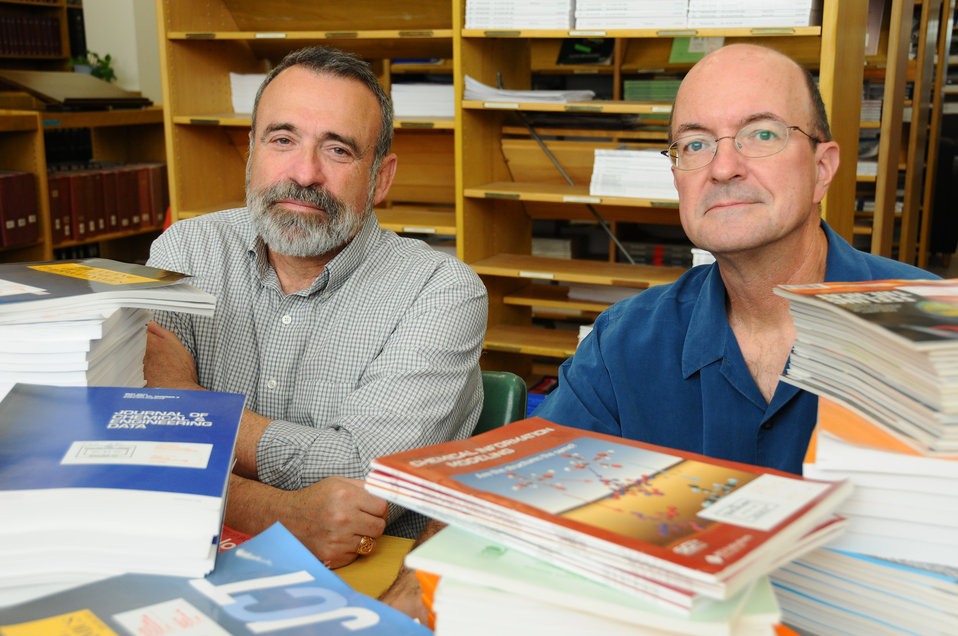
NIST chemists Michael Frenkel and Robert Chirico led a collaborative study with five journals to find ways to ensure the quality of thermophysical property data used in chemical process technologies.